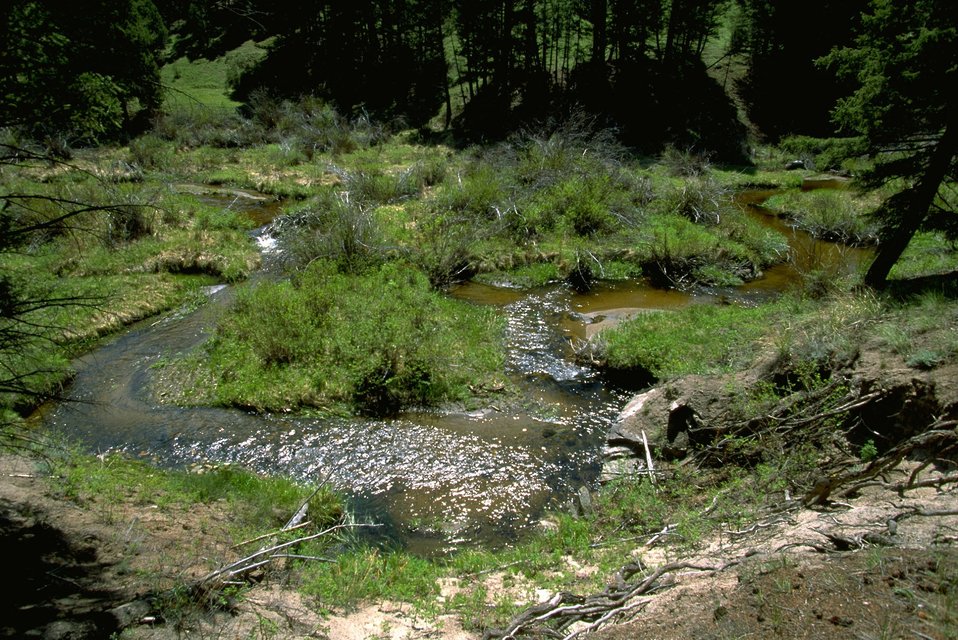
Scenic view of Moose Creek